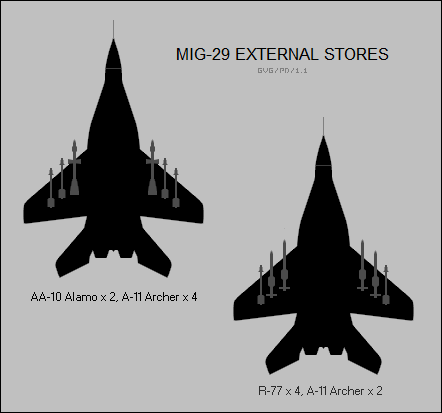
Plan-view silhouettes of the Mikoyan-Gurevich MiG-29 showing external stores